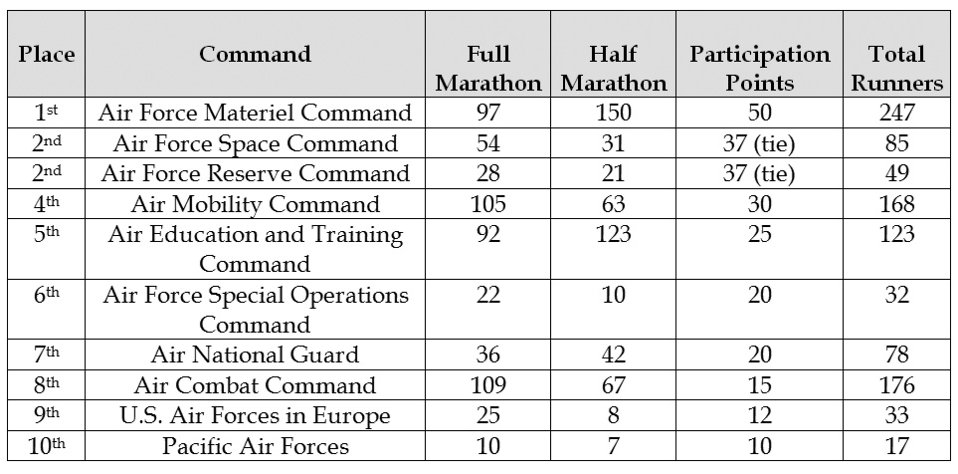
Marathon results by command

This table outlines the results for Air Force major command and Air National Guard runners in the 2008 Air Force Marathon.